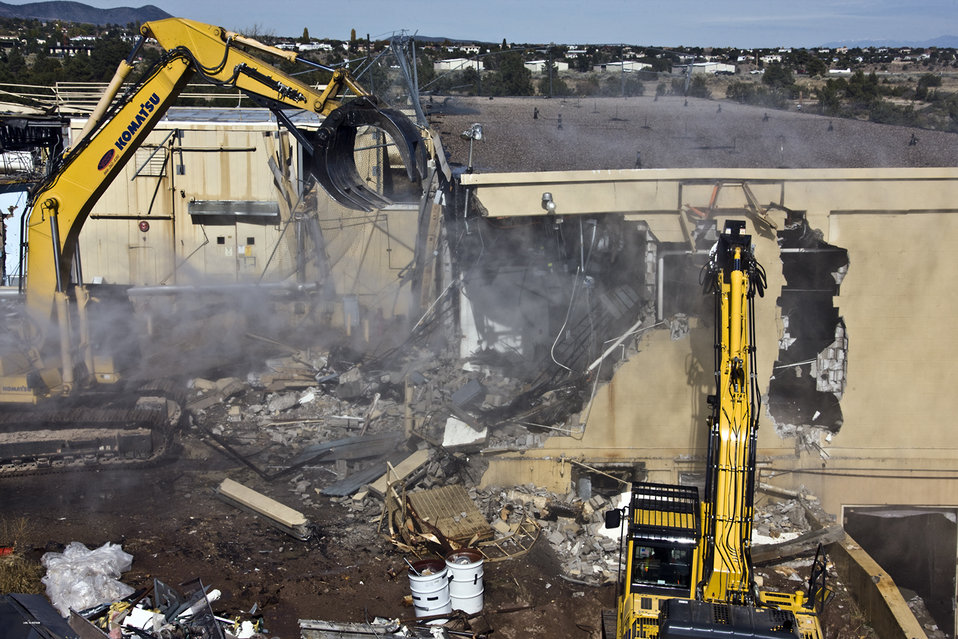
Last Building Demolished at LANL’s DP West

The last of 14 buildings at the historic DP West site at Los Alamos National Laboratory’s Technical Area 21 (TA-21) was demolished, reducing the Lab’s footprint by more than 100,000 square feet.

The demolition was funded by the American Recovery and Reinvestment Act (ARRA) and is part of $212 million in ARRA funds the Lab received for environmental remediation.